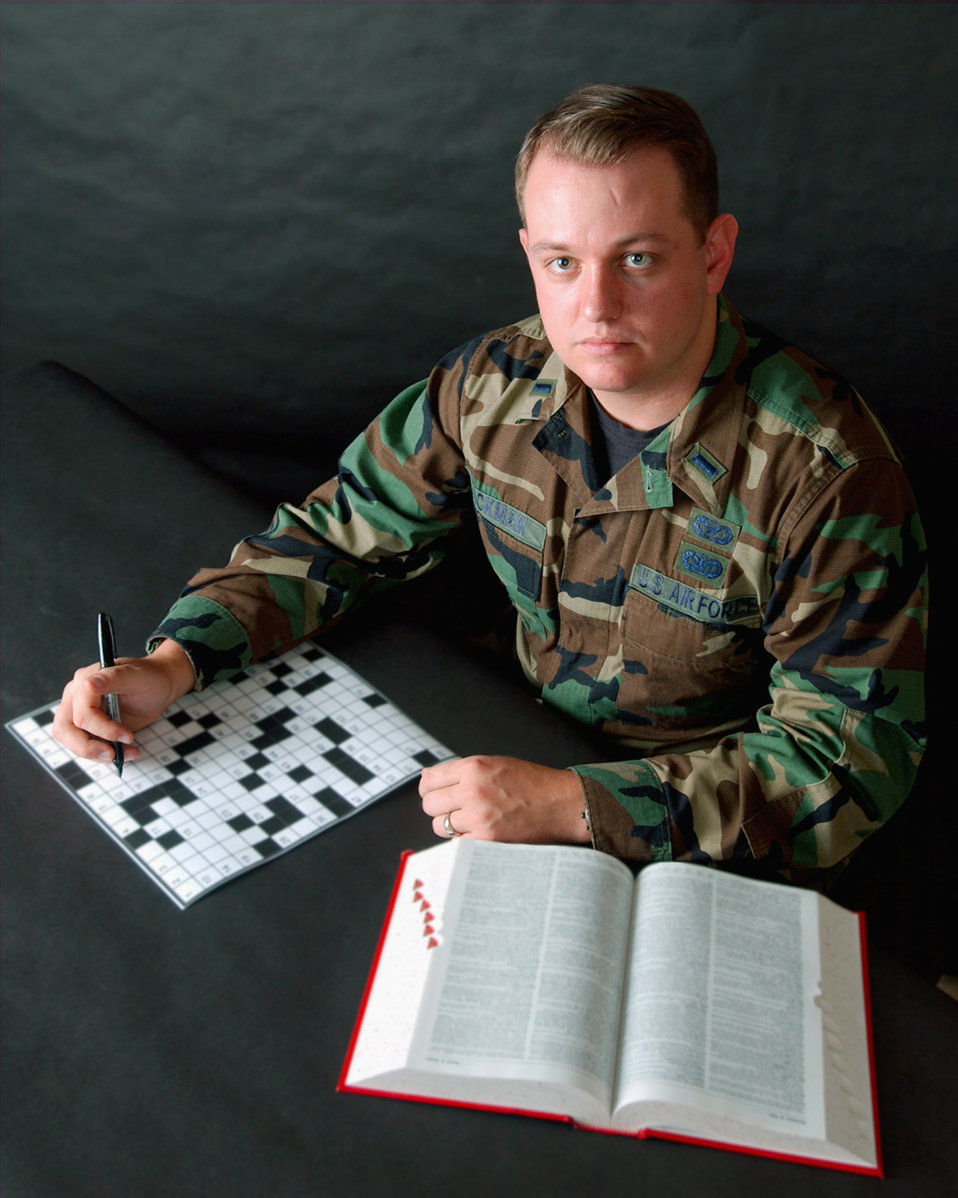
Puzzled lieutenant

ELMENDORF AIR FORCE BASE, Alaska -- First Lt. Tony Wickman creates military-themed crossword puzzles for base newspapers in his off-duty time. The puzzles are now being used at bases throughout the Air Force. Wickman is the deputy chief of Alaskan Command public affairs here.